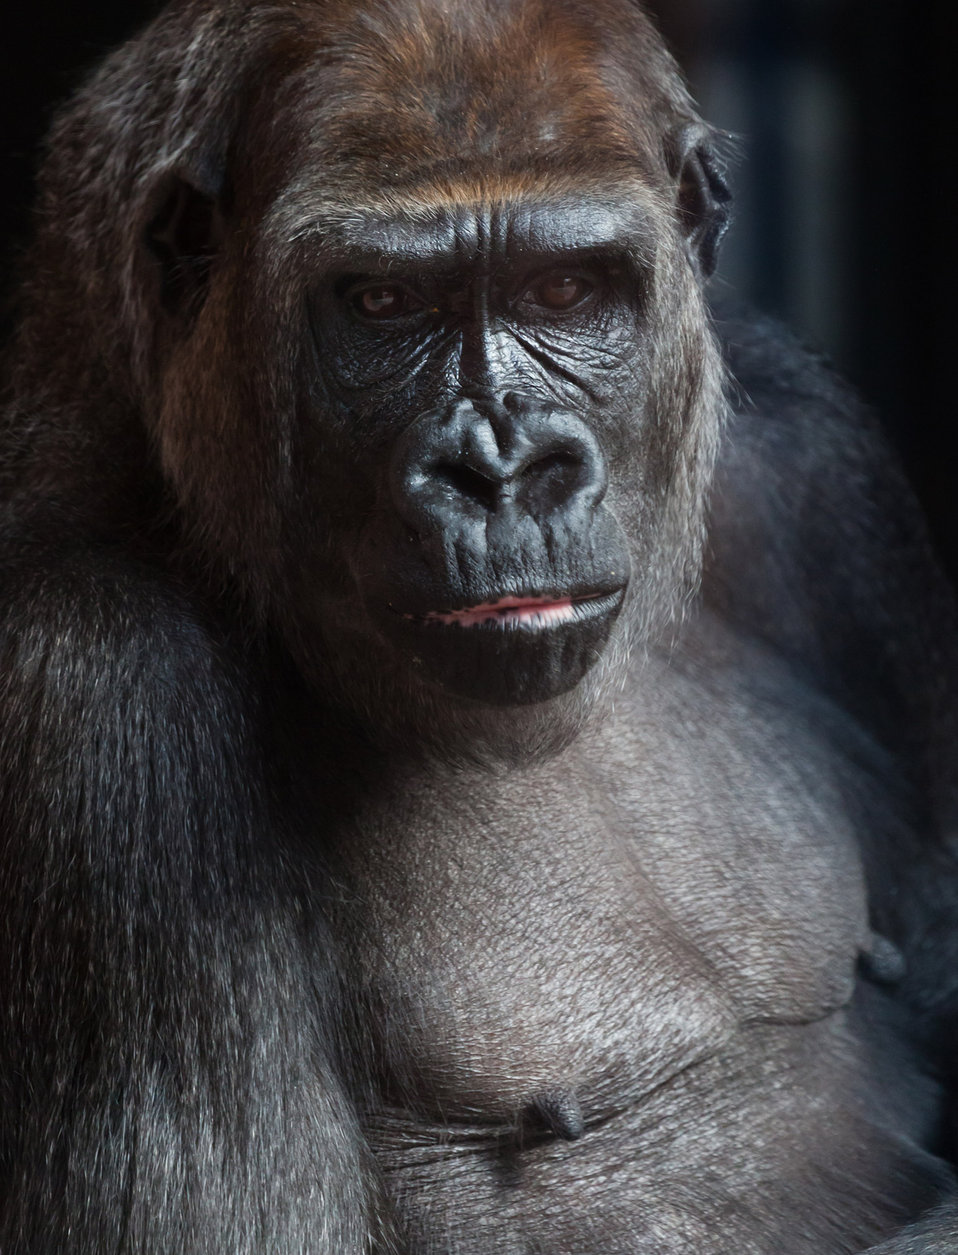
Gorilla portrait

Portrait of a gorilla on dark background.